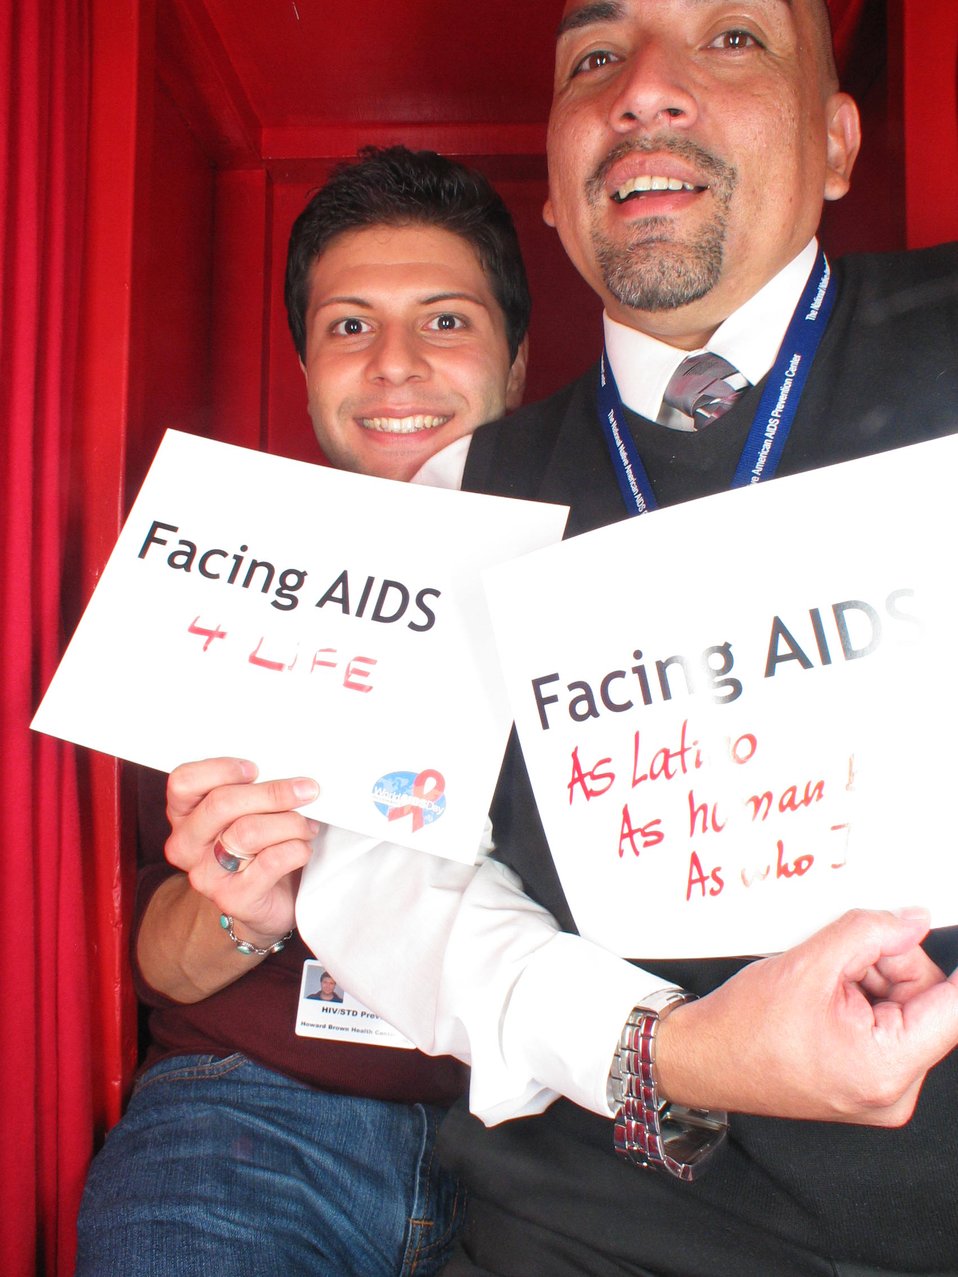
Facing AIDS and life. Facing AIDS as Latino. As human.